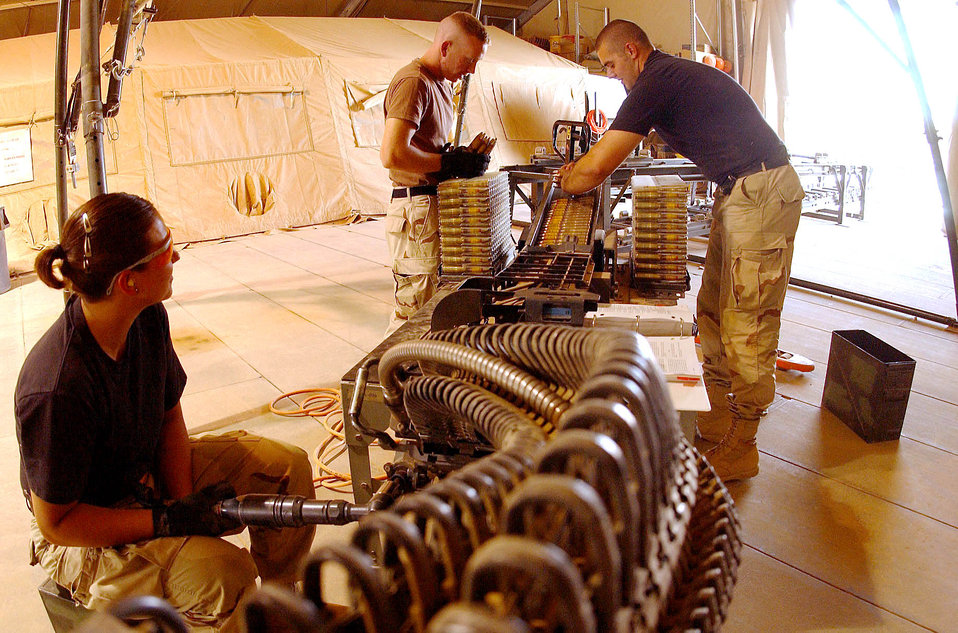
On target: Ammo Airmen do bang up job

BALAD AIR BASE, Iraq -- (From left) Airmen 1st Class Sarah Oliver, Phillip Coswell and Joseph Oliver process 20 mm rounds for an F-16 Fighting Falcon. They are assigned to the 332nd Expeditionary Maintenance Squadron munitions flight here and are deployed from Aviano Air Base, Italy.